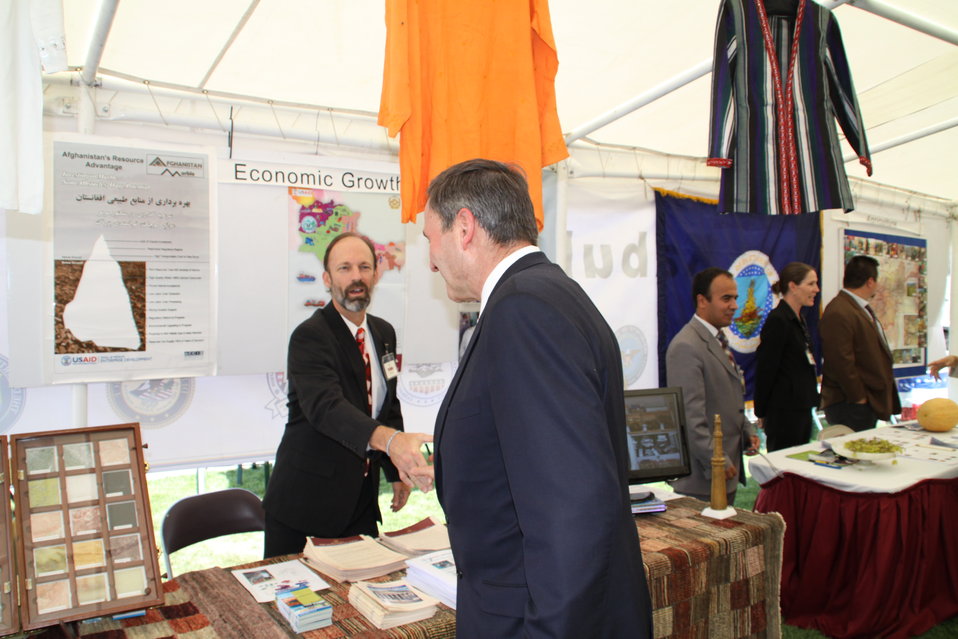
Kabul Official July 4th Celebration